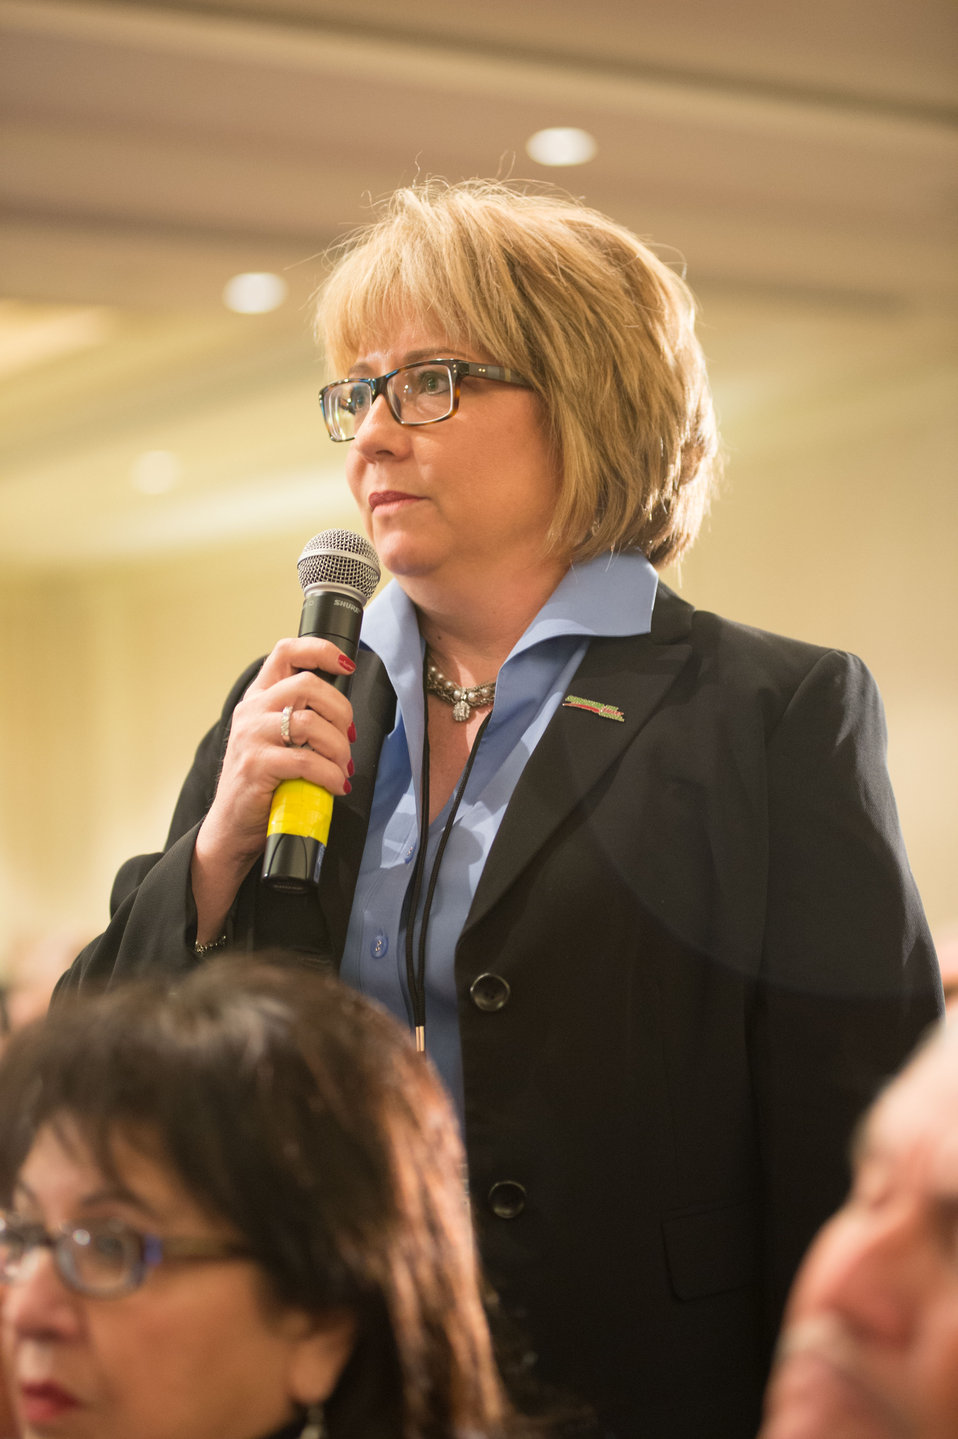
A member of the audience presents a question of the Young Farmers - Unlimited Opportunities panel at the 2014 Agricultural Outlook Forum in Arlington, VA., on Thursday, Feb. 20, 2014. The U.S. Department of Agriculture's (USDA) annual Agricultural Outlook Forum brings together the agricultural community to discuss policy, trade, science, rural development, and the economic outlook for the coming year. The Forum also focuses on forestry, health and nutrition issues, and the changing dynamics and face of rural America.USDA photo by Bob Nichols.